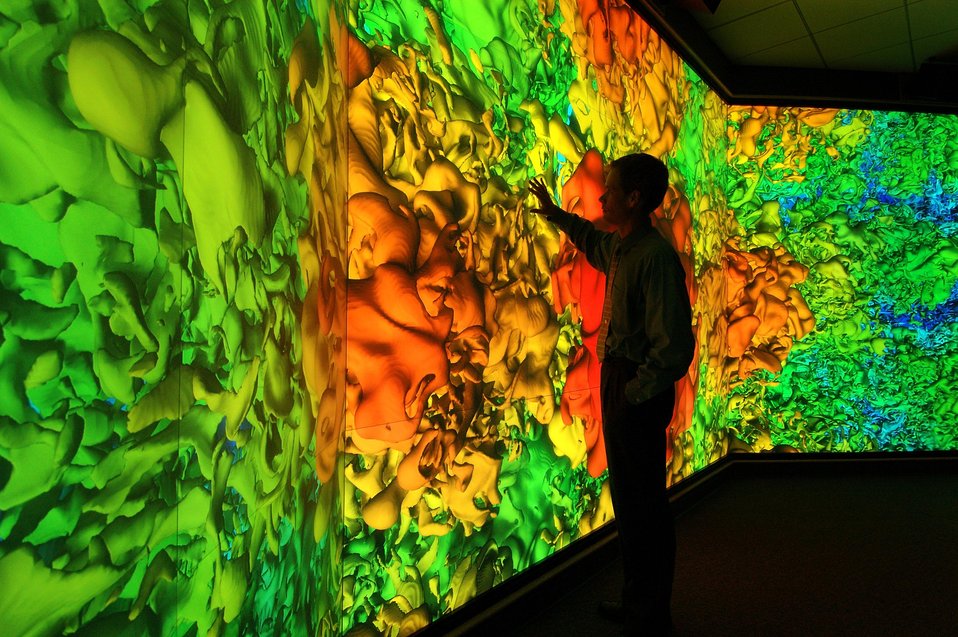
COMPUTER SIMULATION DISPLAYED ON WALL OF VISUALIZATION LAB AT SANDIA NATIONAL LABORATORY.

COMPLEX MATERIALS INTERACTION COMPUTER SIMULATIONS CAN BE DISPLAYED ON THE LARGE SCREEN IN SANDIA'S VISUALIZATION CORRIDOR.